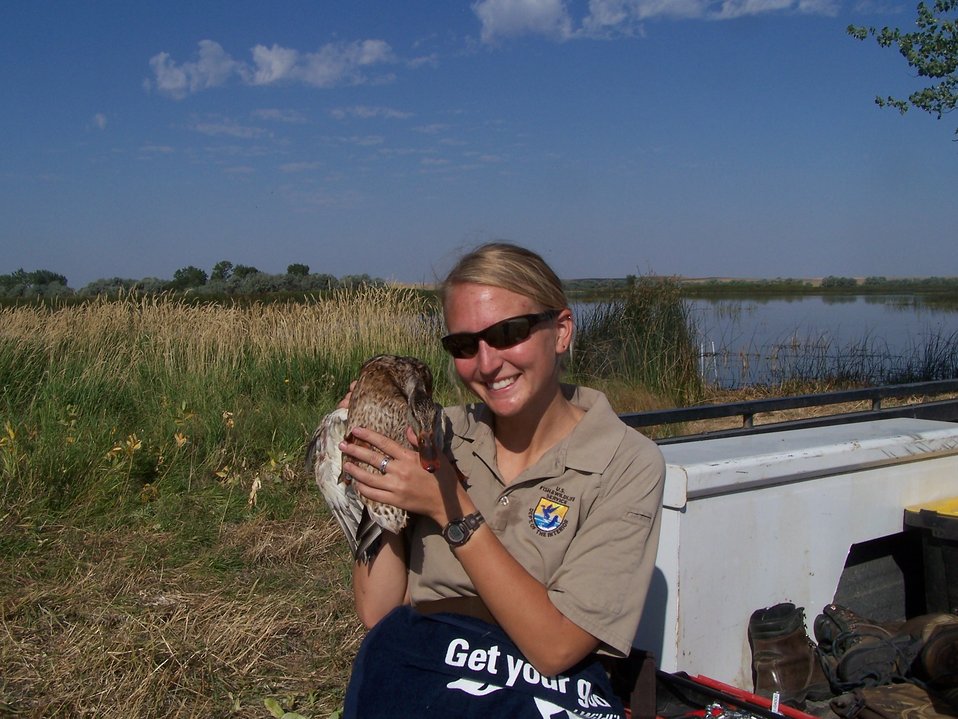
Get Your Goose On! - Duck Banding Style

Wildlife Biologist, Jessica Larson, Gets Her Goose On while banding ducks at Bowdoin NWR.